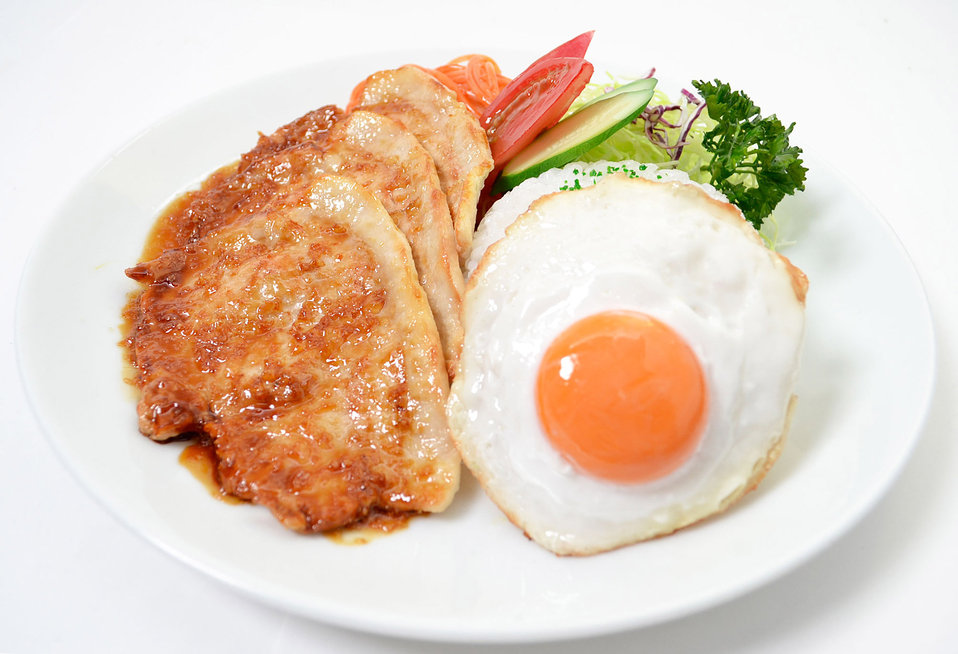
Plate lunch - pork ginger and eggs

Plate lunch, pork ginger, fried eggs,dish, food, lunch.